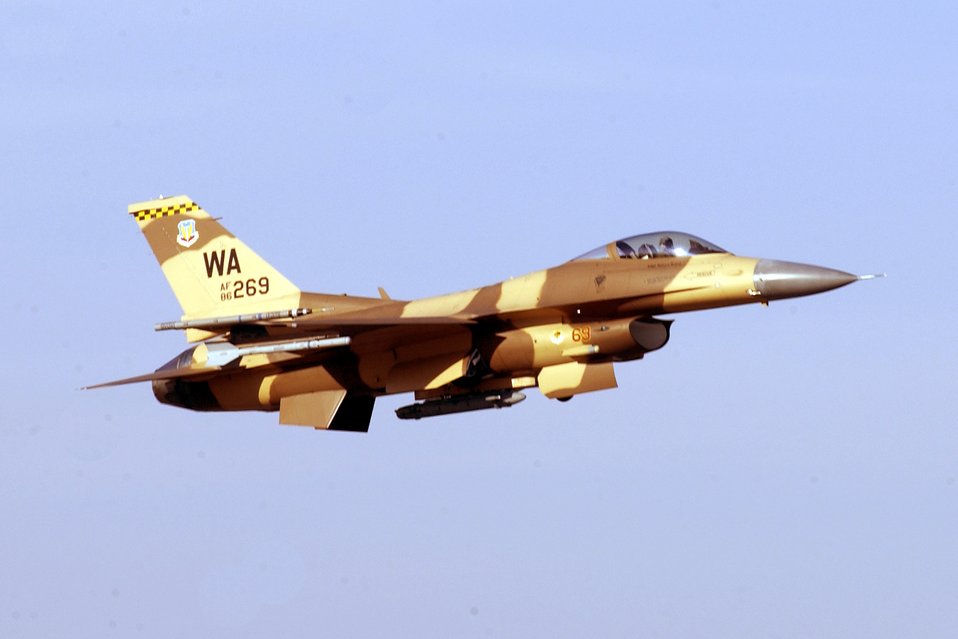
Aggressors add realism to William Tell

OVER TYNDALL AIR FORCE BASE, Fla. -- An F-16 Fighting Falcon pilot from Nellis Air Force Base, Nev., flies as an aggressor during Exercise William Tell 2004. The pilot is assigned to the 64th Aggressor Squadron.